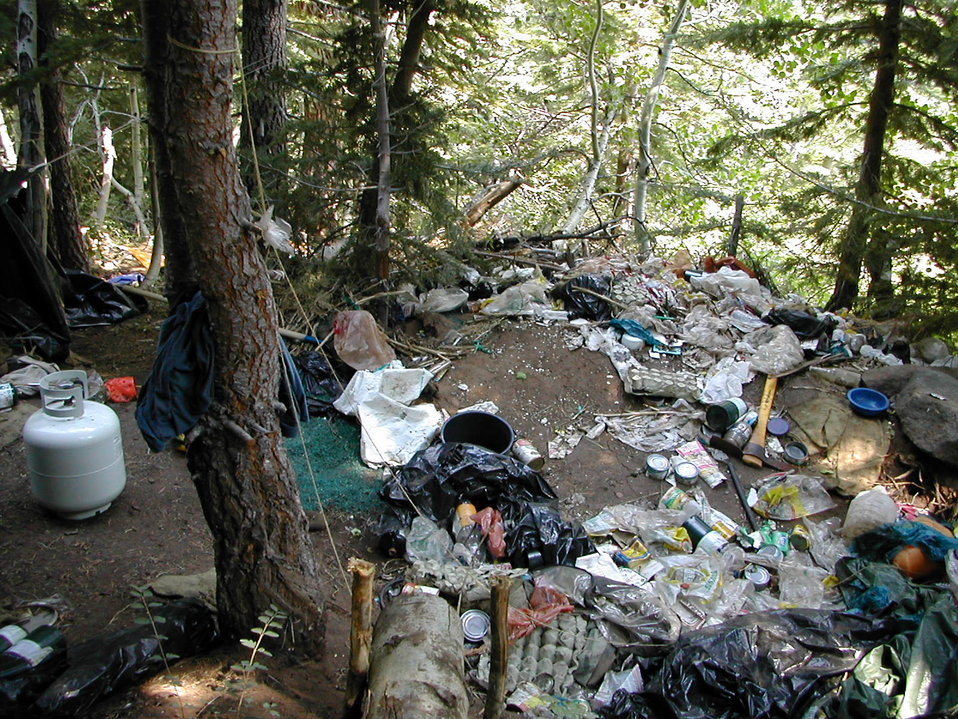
Grow site safety b

A small portion of the garbage and debris left in the forest at a drug trafficking organization's marijuana grow site on the Shasta-Trinity National Forest in California.